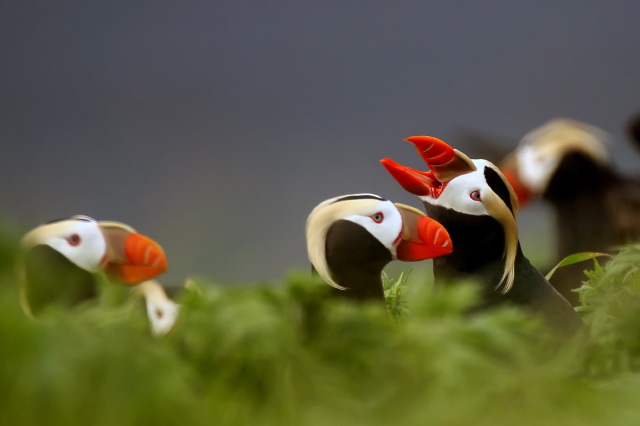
tufted puffins, Tangik Island, Alaska Maritime Refuge, by Steve Ebbert, USFWS